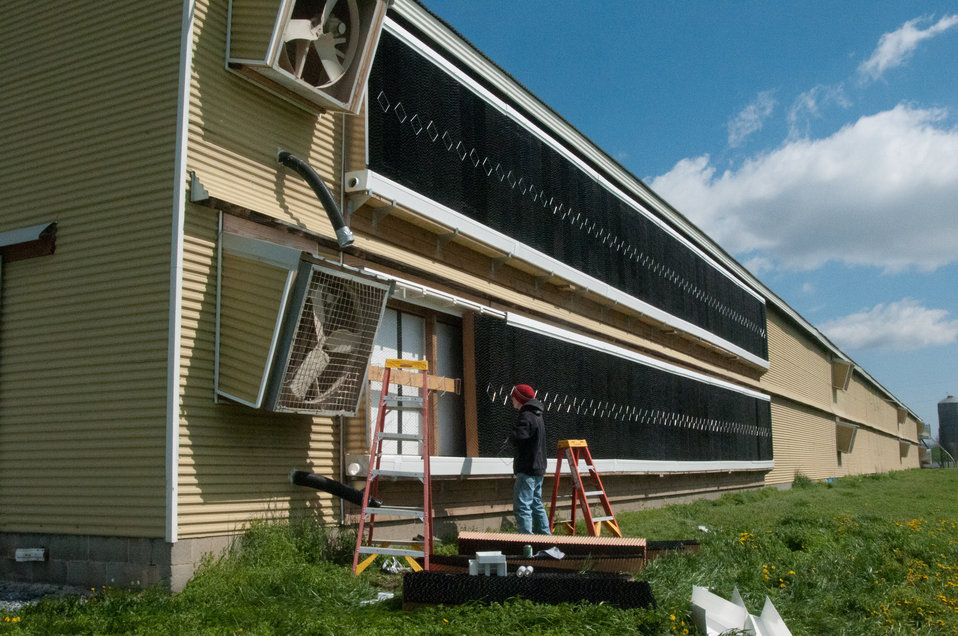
The Roxanne Molnar Farm, owned by Roxanne and Matthew Molnar is an 80,000 chicken farm, in Grantville, PA, on Thursday, April 21, 2011, and were recipients of a $20,000 Rural Energy for America Program (REAP) grant. The money is a portion of the cost to modernize the second of two 40,000 chicken capacity chicken houses. Chickens need to be kept at a comfortable temperature to remain productive. New radiant heaters keep the chickens warm during Pennsylvania winters. On warm days, ceiling vents provide passive venting of heat out of the building; when chicken house temperatures are estimated to be above 90 degrees, fans come on, pulling air through water evaporator elements lowering air temperature down 10-15 degrees and flows along the chicken house's length, in effect a tunnel of cooled air. The benefits to the chickens are heat and excess moisture removal; minimized dust and odor; limits buildup of ammonia and carbon dioxide; and provides oxygen for respiration. All these systems are computer controlled allowing owner, Roxanne Molnar to run the farm by herself and raise two small boys Gavin (2) and Grant (5). Husband, Matthew works off the farm and frequently travels, so along with the demands of parenting and manually controlling fans, vents, and having to remove the 80,000 chickens from their feeders and moving them around to cool them was an increasingly daunting task. The computer controls of the new system automate many of the daylong tasks allowing the Molnar’s to run their family farm. USDA Photography by Lance Cheung.